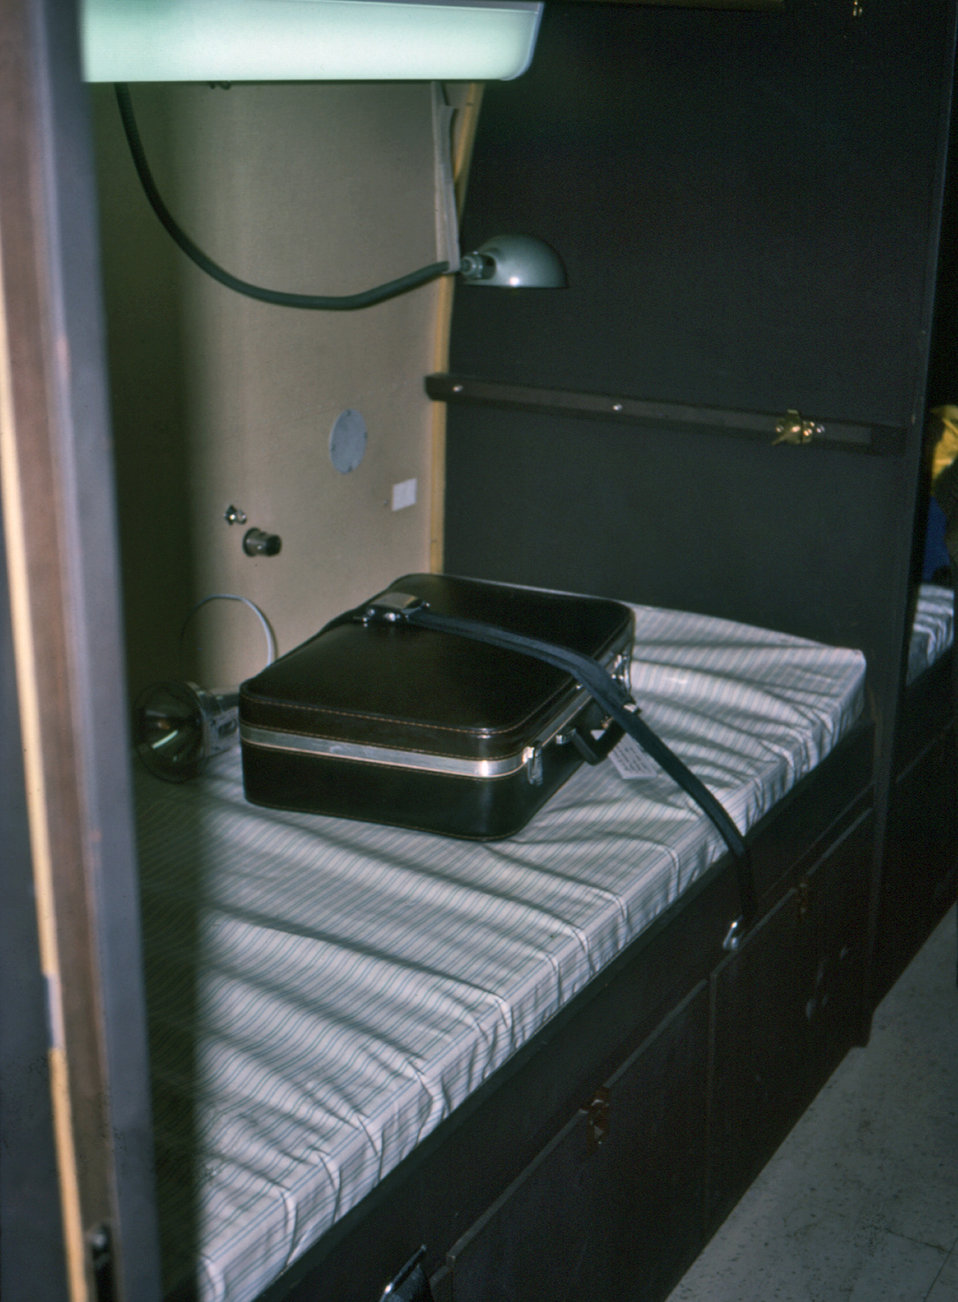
Shown here was the bed located within a mobile quarantine facility (MQF), which was photographed during a 1976 simulated medical quarantine exercise.